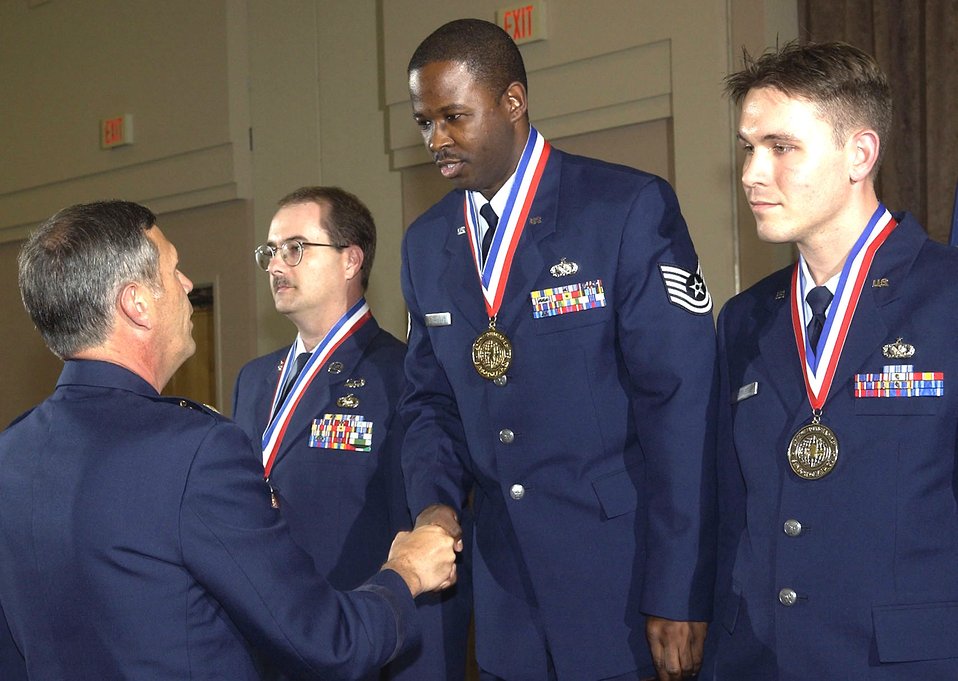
AIA names 'Best of the Best' during Sensor Olympics

Maj. Gen. Craig Koziol, Air Intelligence Agency commander, congratulates Tech. Sgt. George McFarland, gold medal recipient for the 2S0X1 Supply Management career field. Sergeant McFarland is from the 373rd Support Squadron, Misawa Air Base, Japan. Silver medalist for the career field is Tech. Sgt. Paul Reeves, 488th Intelligence Squadron, RAF Mildenhall, England. Bronze medalist is Tech. Sgt. Anthony Bussey, Air Force Information Operations Center, Lackland Air Force Base, Texas. Gold, silver and bronze medals were awarded to the top three enlisted specialists in each of 23 career fields within AIA on Oct. 19, at the 27th Annual Sensor Olympics Banquet at the Lackland AFB Gateway Club.